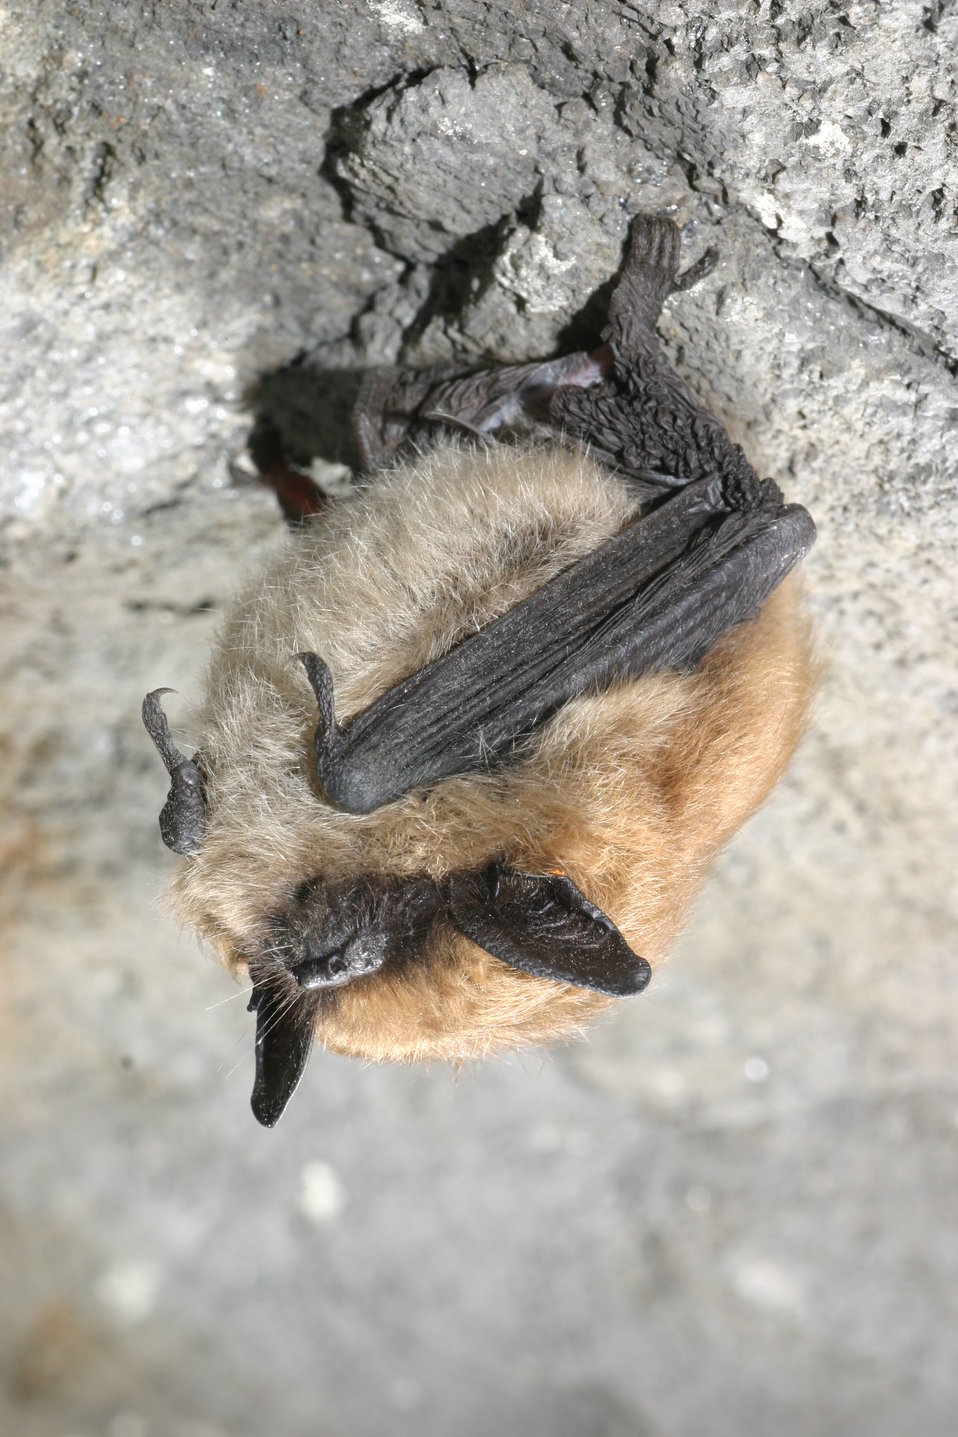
Eastern small-footed bat

Myotis lebeii